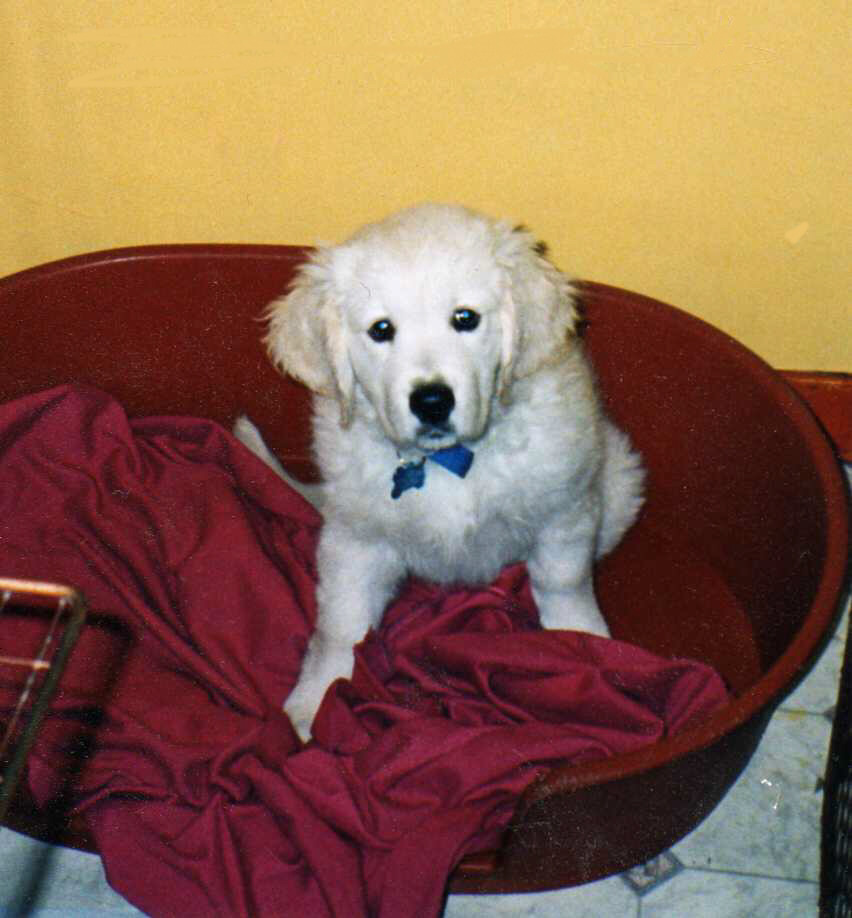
Baby Jake (puppy)